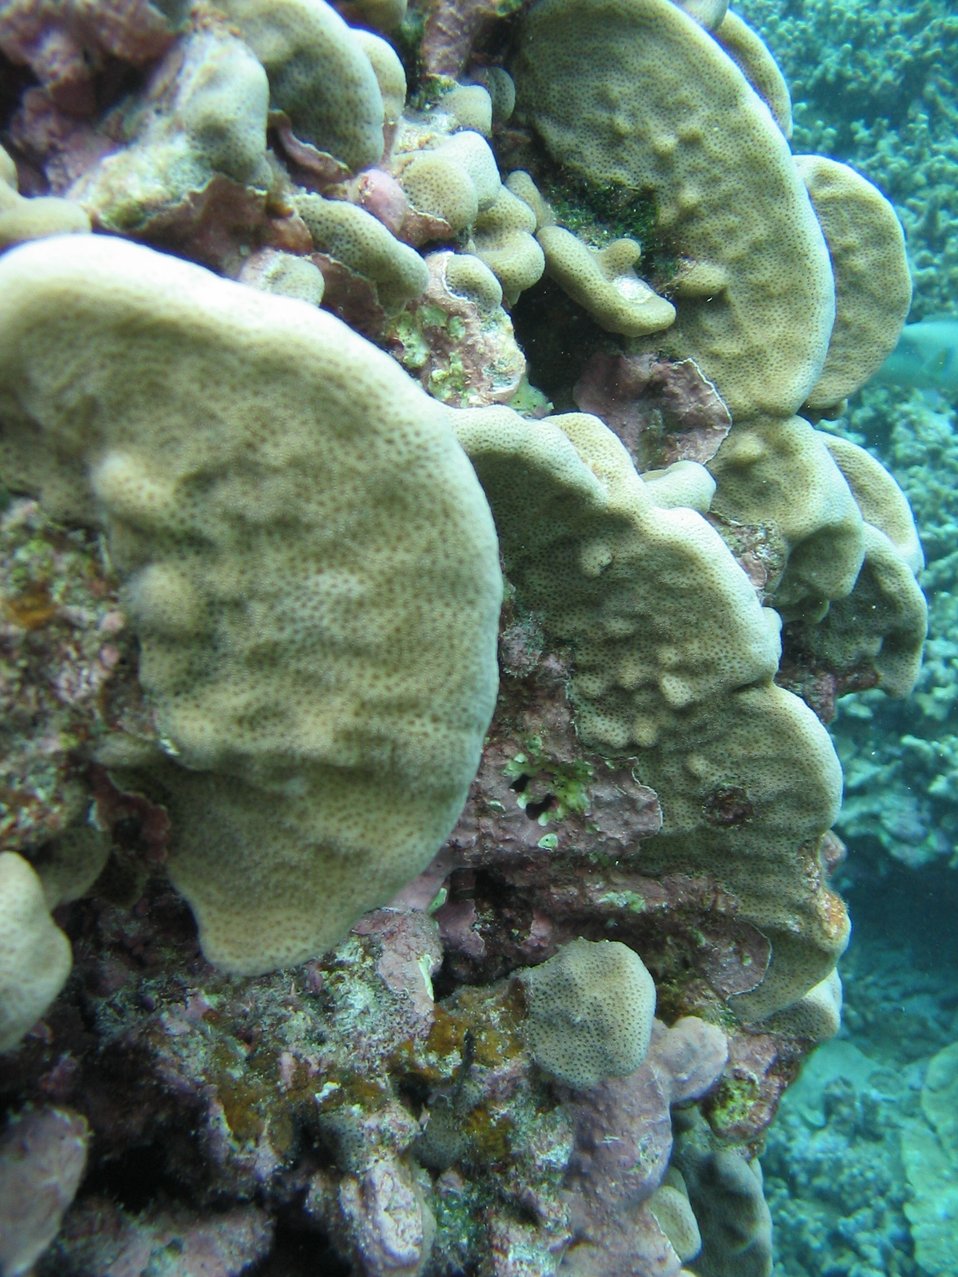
Pavona duerdeni - sometimes called pork chop coral.